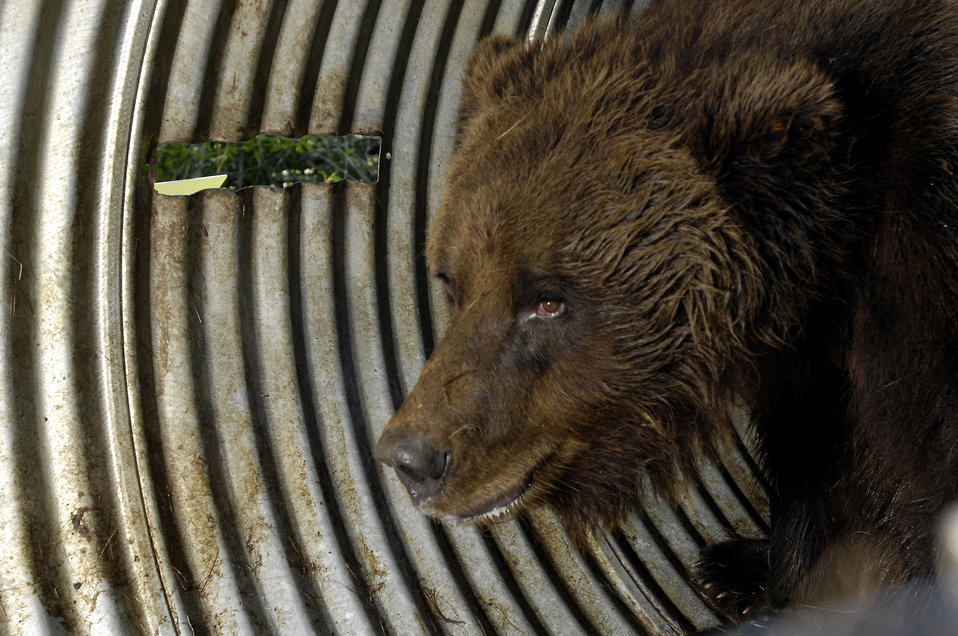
Unbearable time at Elmendorf

A brown bear sits in a barrel trap after being captured here July 17 at Elmendorf Air Force Base, Alaska. Elmendorf AFB's military conservation agents and the Alaska Department of Fish and Game took DNA, blood and hair samples, measurements and fit the bear with a tracking collar that will allow the bear's movements to be monitored by global positioning satellites. The bear, a female around 6 years old and weighing more than 400 pounds, had been spotted near the base golf course and a barrel trap was set by base conservation agents. After trapping and collaring the bear, agents relocated the bear to a remote part of the base and monitored it from a distance until the bear woke and moved into the woods. The Department of Defense funded a study through the ADF&G to monitor the movement of brown bear on Elmendorf AFB and nearby Fort Richardson.